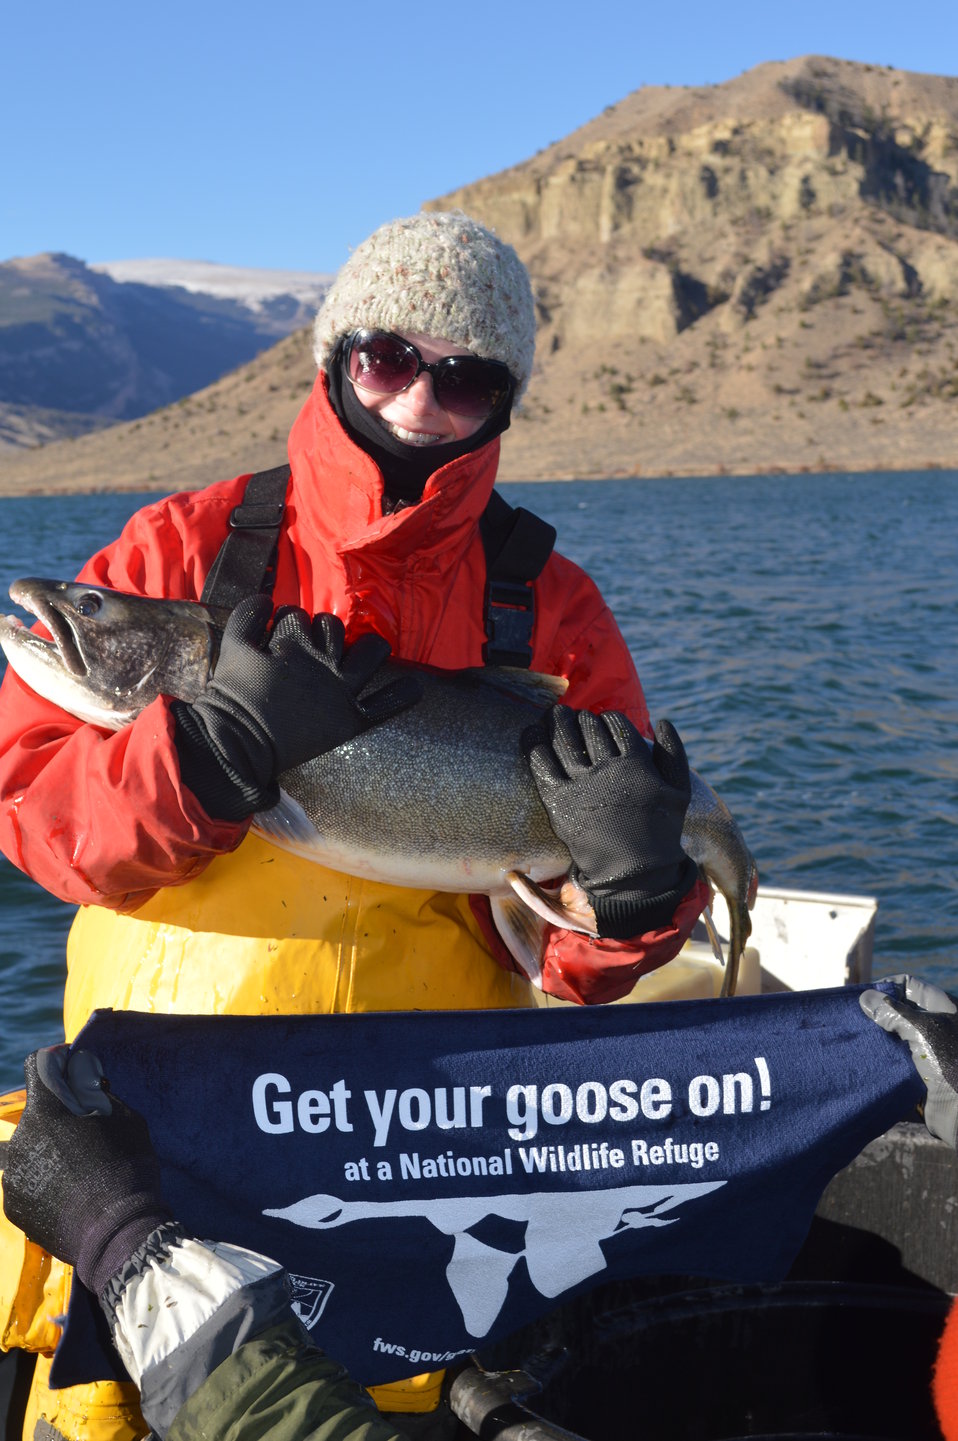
Get your Goose On! for Lake Trout!